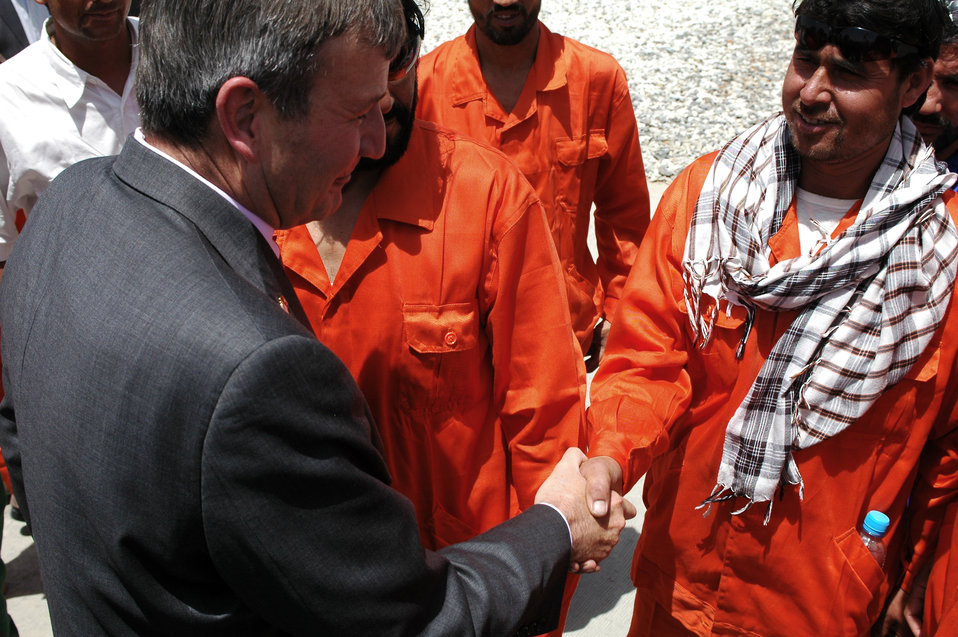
105 MW Tarakhil Power Plant Handover